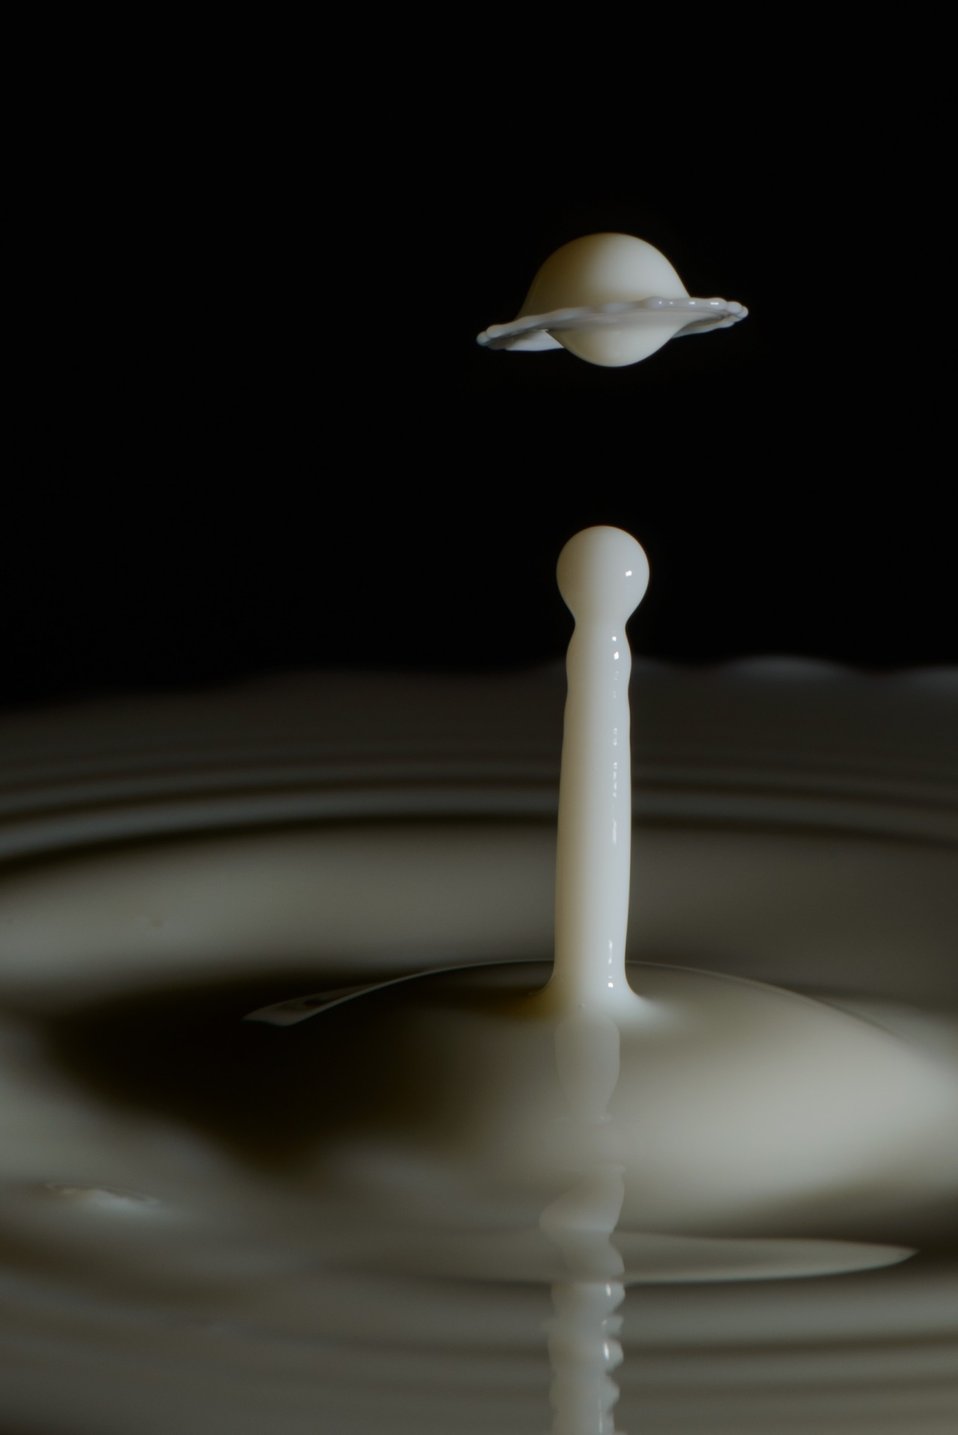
Milk satellite

Playing with the impact of drops.